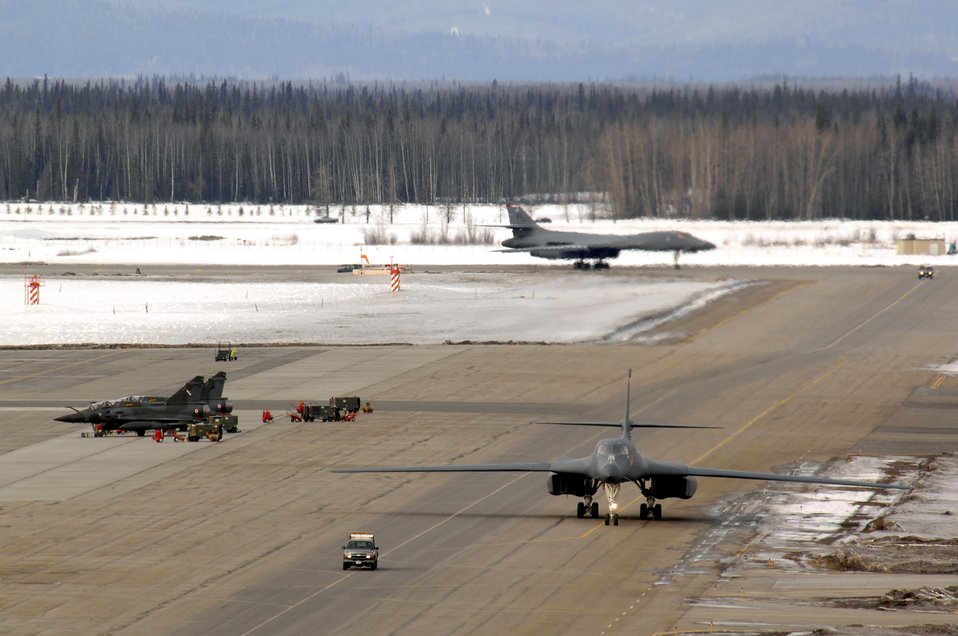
Red Flag-Alaska waves

Two B-1B Lancers from Ellsworth Air Force Base, S.D., taxi on the flightline for Red Flag-Alaska 07-1 April 3 at Eielson AFB, Alaska. The series of Pacific Air Forces commander-directed field training exercises for U.S. forces, provide joint offensive counter-air, interdiction, close-air support, and large-force employment training in a simulated combat environment.